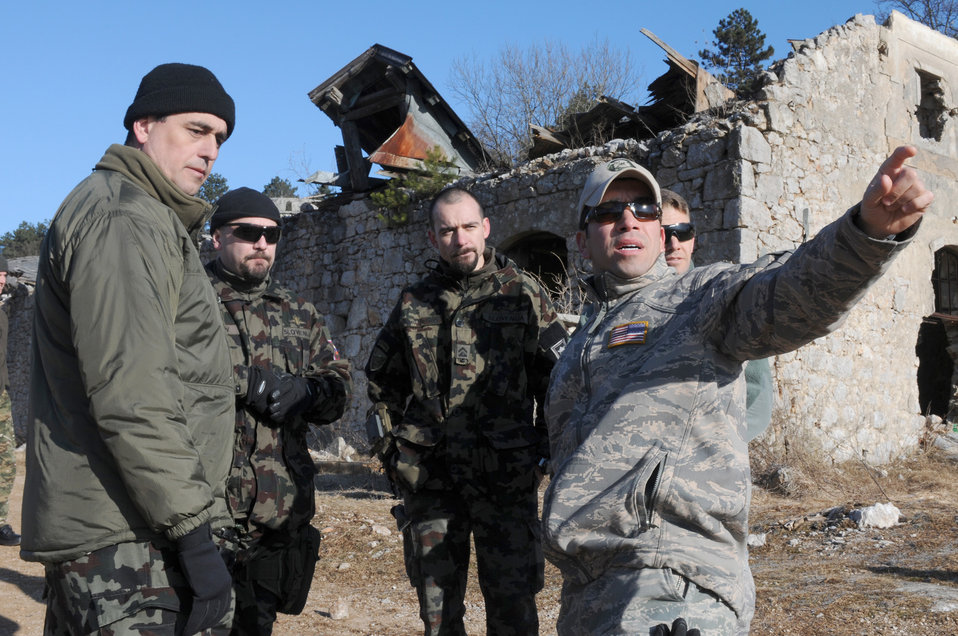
US, Slovenian TACP training

Tech. Sgt. Eduardo Ramos explains the sequence of events to three Slovenian army joint terminal attack controllers during a NATO coalition combat capability training exercise at Pocek Range Feb. 3, 2011, in Postojna, Slovenia. The exercise consisted of close-air-support training between Airmen from Aviano Air Base, Italy, and Slovenian army JTACs and tactical air control party operators, as well as Slovenian PC-9M aircrews. Sergeant Ramos is a 8th Air Support Operations Squadron JTAC.